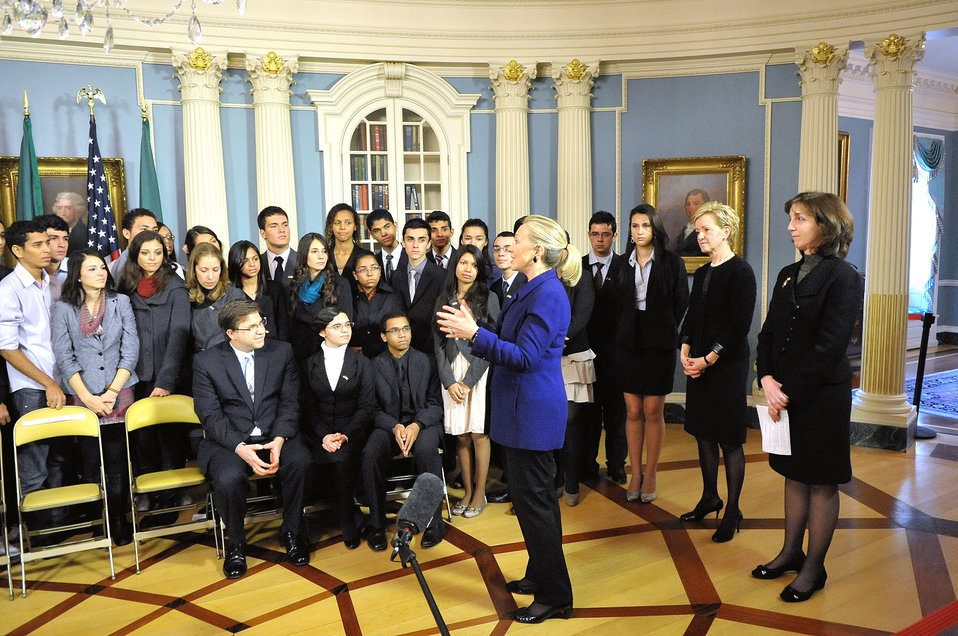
Secretary Clinton Meets With Brazilian Youth

U.S. Secretary of State Hillary Rodham Clinton meets with Brazilian youth participating in the Youth Ambassadors program at the U.S. Department of State in Washington, D.C., on January 25, 2012. The Secretary celebrated the 10th Anniversary of the Youth Ambassadors Program and highlighted the importance of engaging youth worldwide.